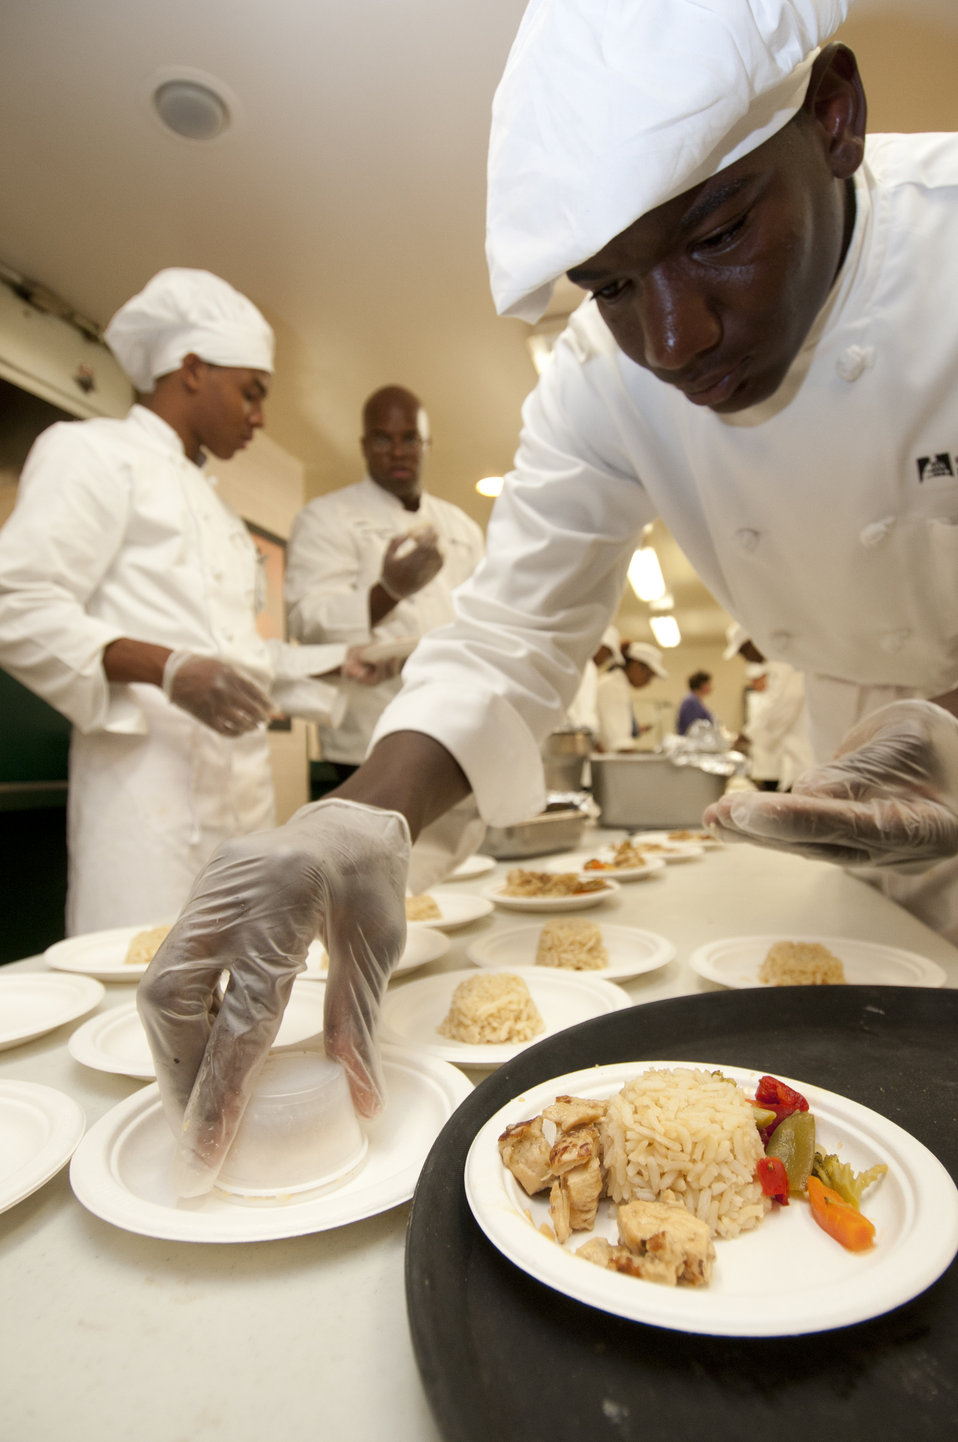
Washington, DC Public Schools student chef Dominique Mitchell (right) plates rice, while fellow student chef Victor Rodgers (left) receives some coaching from teacher Fredrick Monroe (center) during the Cooking Up Change, National Healthy Cooking Competition at the USDA in Washington, DC, on Monday, May 23, 2011.